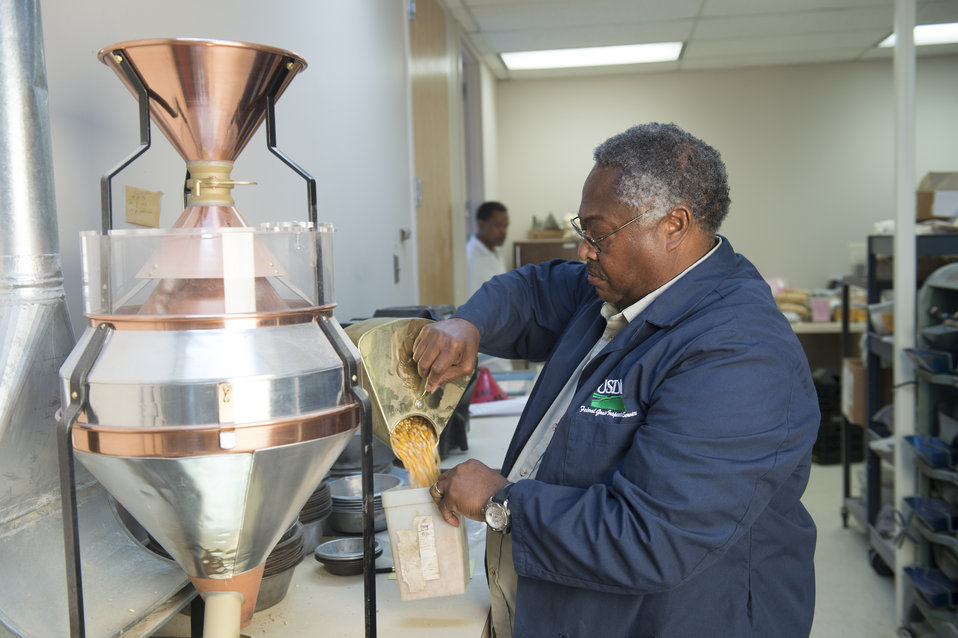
A U.S. Department of Agriculture (USDA) Grain Inspection, Packers and Stockyards Administration (GIPSA) Federal Grain Inspection Service (FGIS) scientist tests corn at the FGIS inspection laboratory in New Orleans, LA on Monday, Nov. 18, 2013.